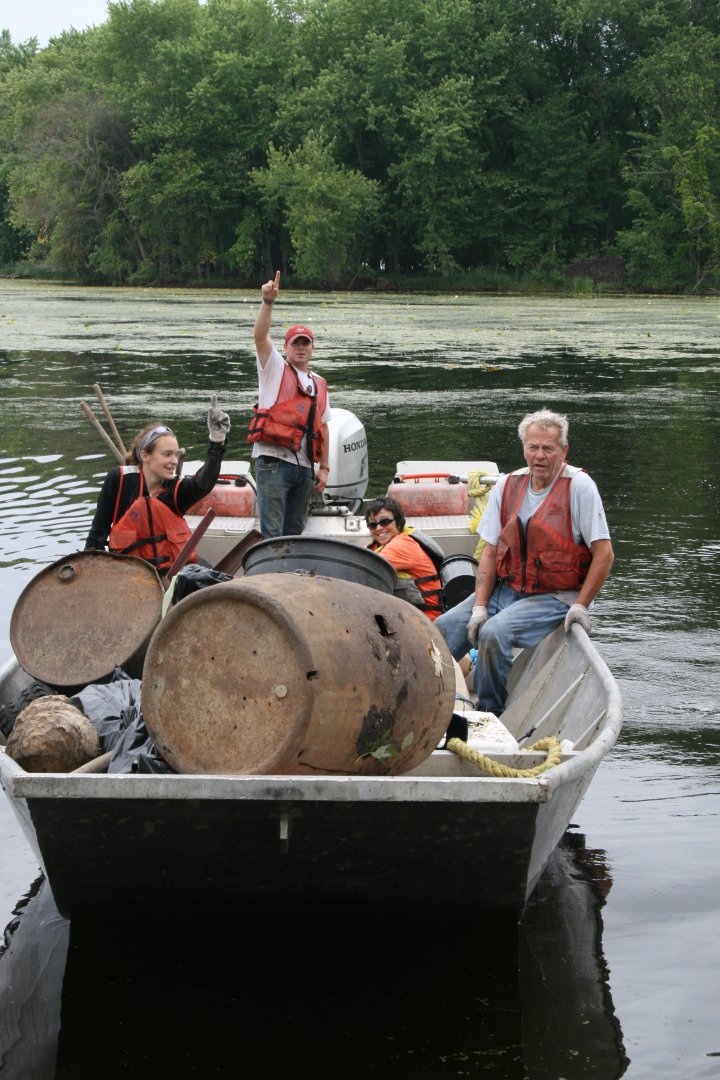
First boat in at McNally Landing

Living Lands and Waters Founder and President Chad Pregracke and volunteers Sarah, Christine and David return to the Refuge boat landing with their “find” during The Great Mississippi River Cleanup held June 16, 2012 on the Winona District.